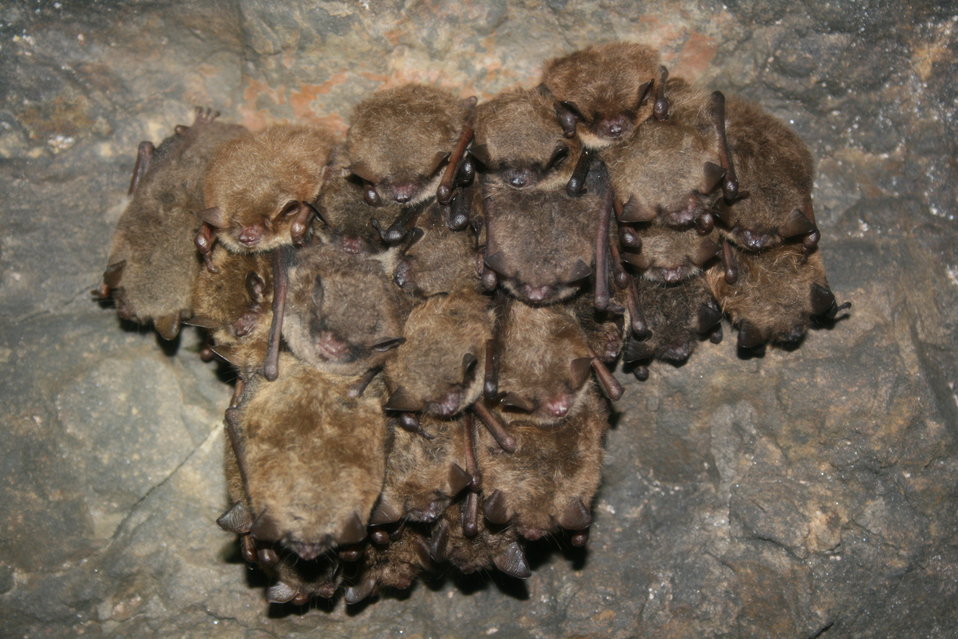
Hibernating Myotis spp.